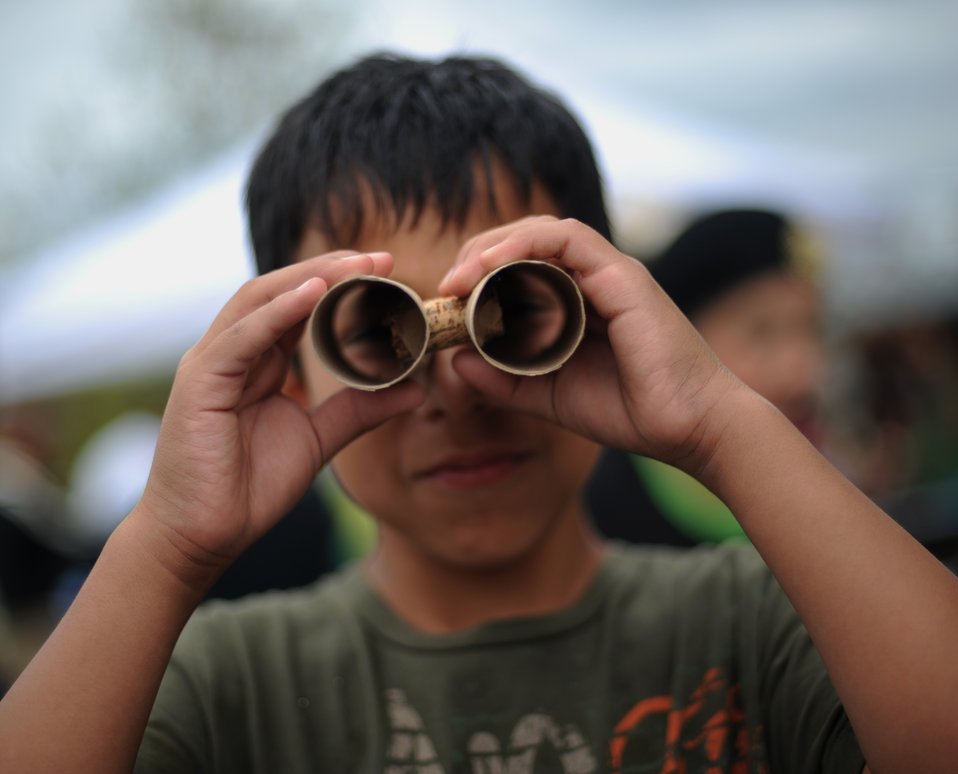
Recycled Artwork

A young boy crafted a pair of binoculars from recycled materials at the 5th Annual Duwamish River Festival in Seattle. The festival included a variety of environmentally-friendly activities to help kids learn to recycle, reduce, reuse, and compost. Visit www.epa.gov/region10/duwamish to learn more about EPA's efforts to clean up and restore the lower Duwamish River.